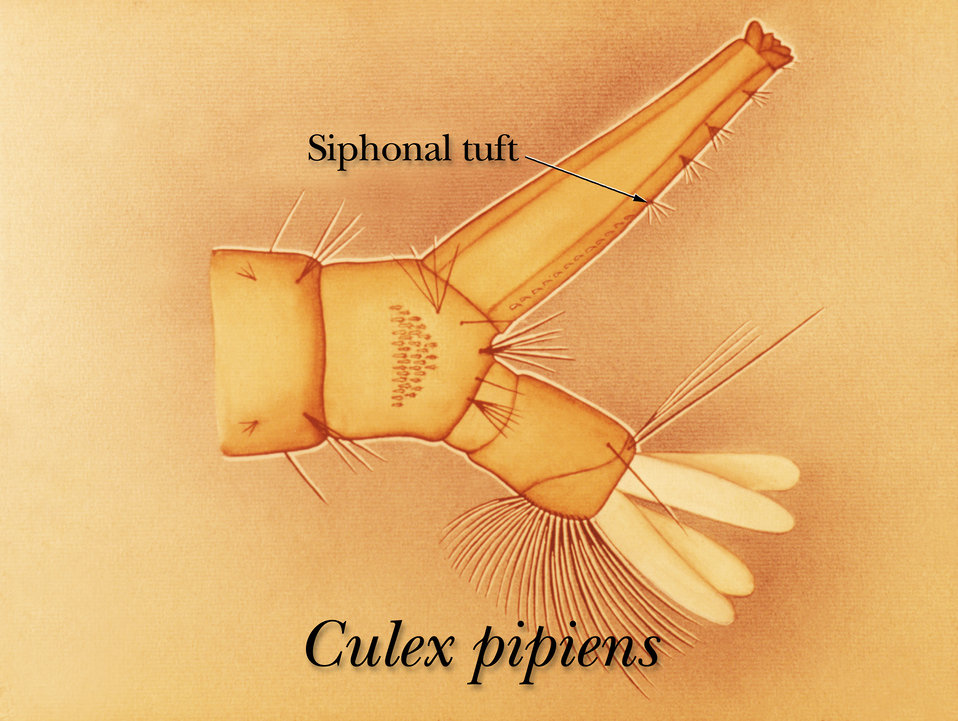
An illustration identifying the siphon tuft on the terminal abdominal segment of a Culex pipiens mosquito larva.